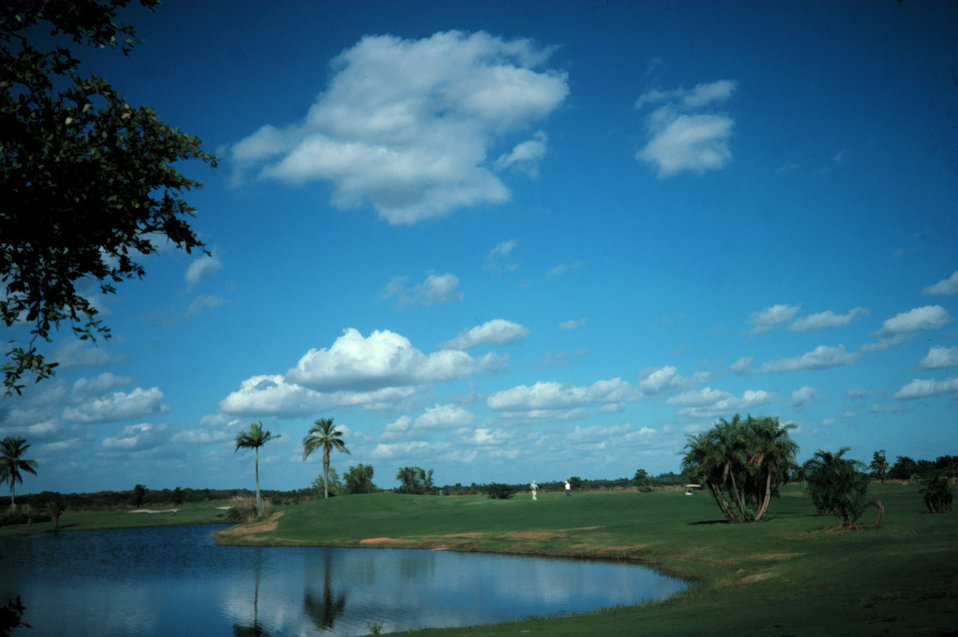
Fair weather cumulus